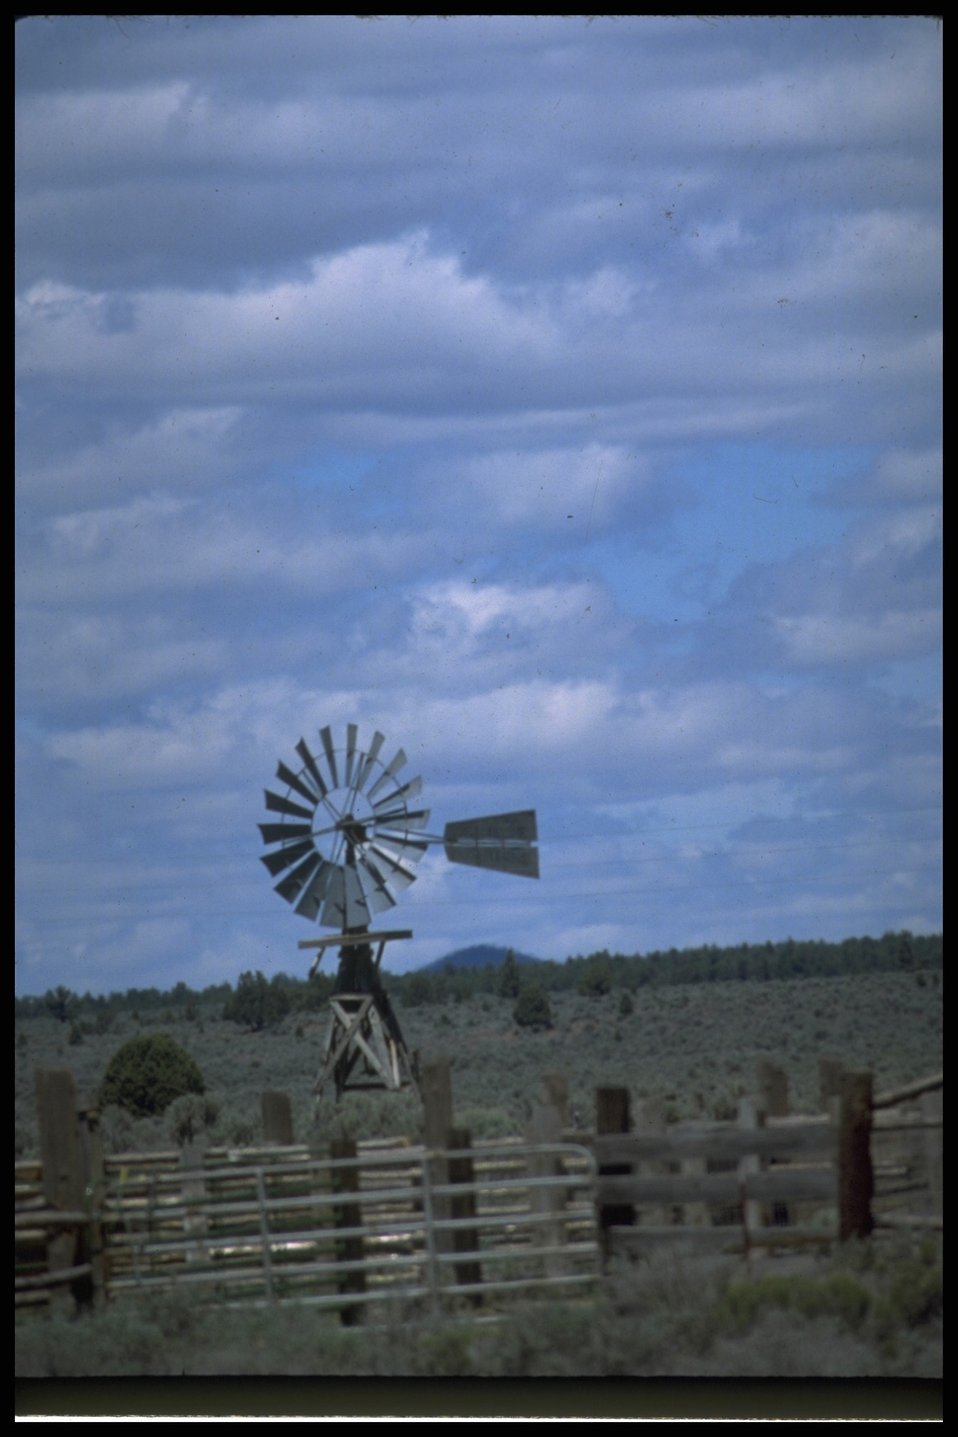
Old wind mill, Shirk Ranch, Lakeview District.